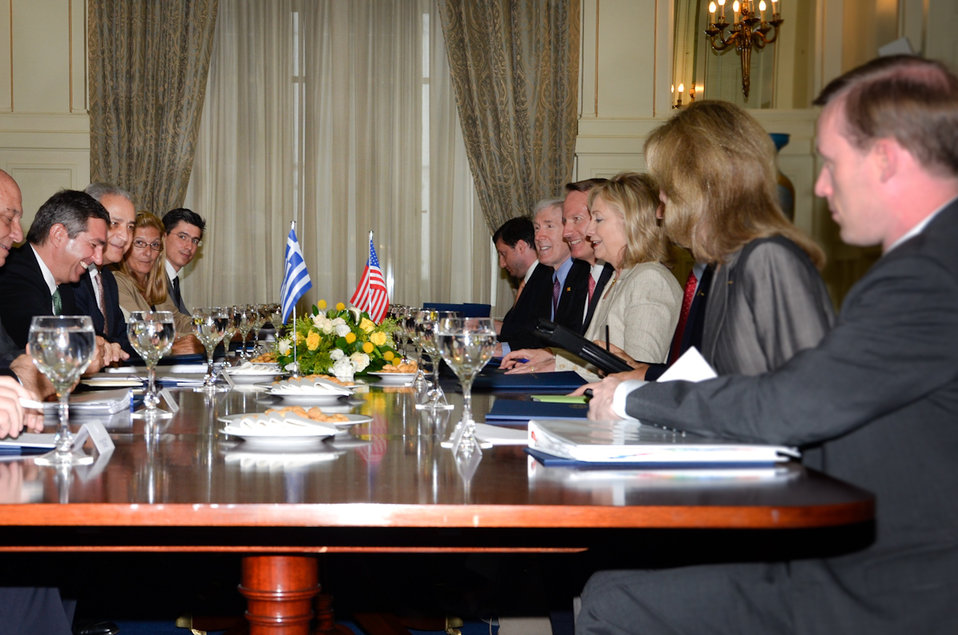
Secretary Clinton Meets With Greek Foreign Minister Lambrinidis

U.S. Secretary of State Hillary Rodham Clinton meets with Greek Foreign Minister Stavros Lambrinidis in Athens, Greece, on July 17, 2011.